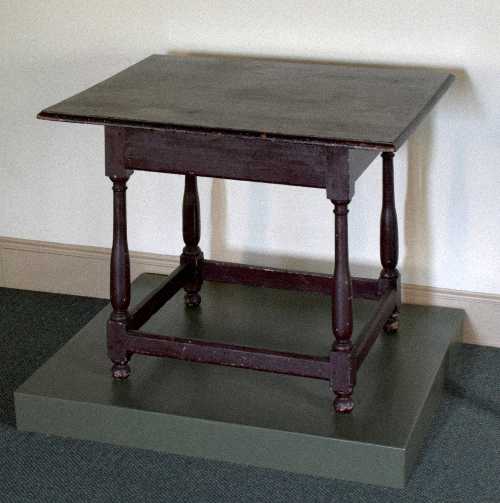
Photo taken by Robert Smith, May 2007, in the Mennonite Meetinghouse in Germantown. Referred to in article on The 1688 Germantown Quaker Petition Against Slavery.